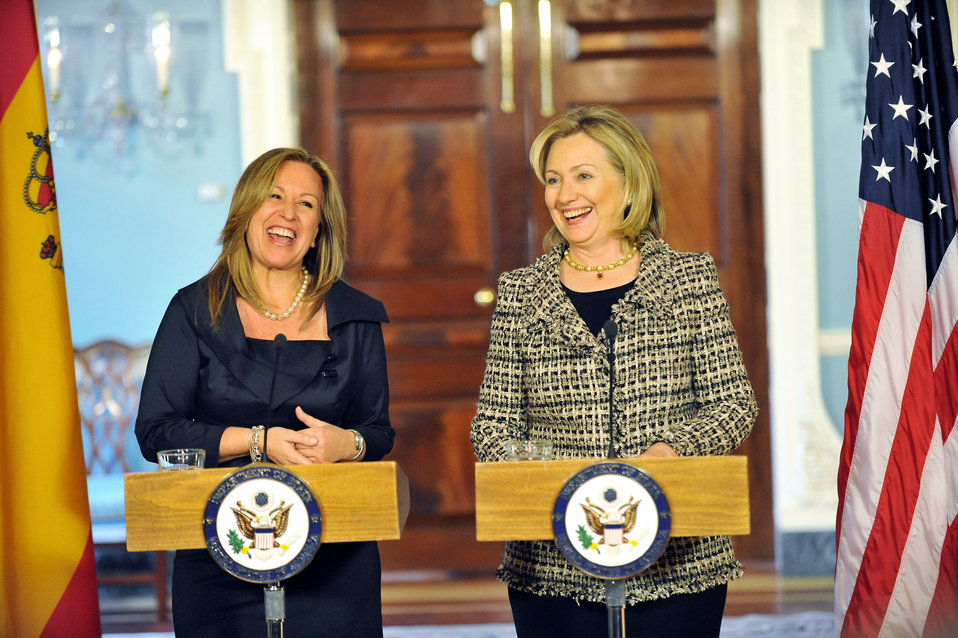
Secretary Clinton and Spanish Foreign Minister Jimenez Deliver Remarks

U.S. Secretary of State Hillary Rodham Clinton and Spain's Foreign Minister Trinidad Jimenez deliver remarks at the U.S. Department of State in Washington, DC, on January 25, 2011.